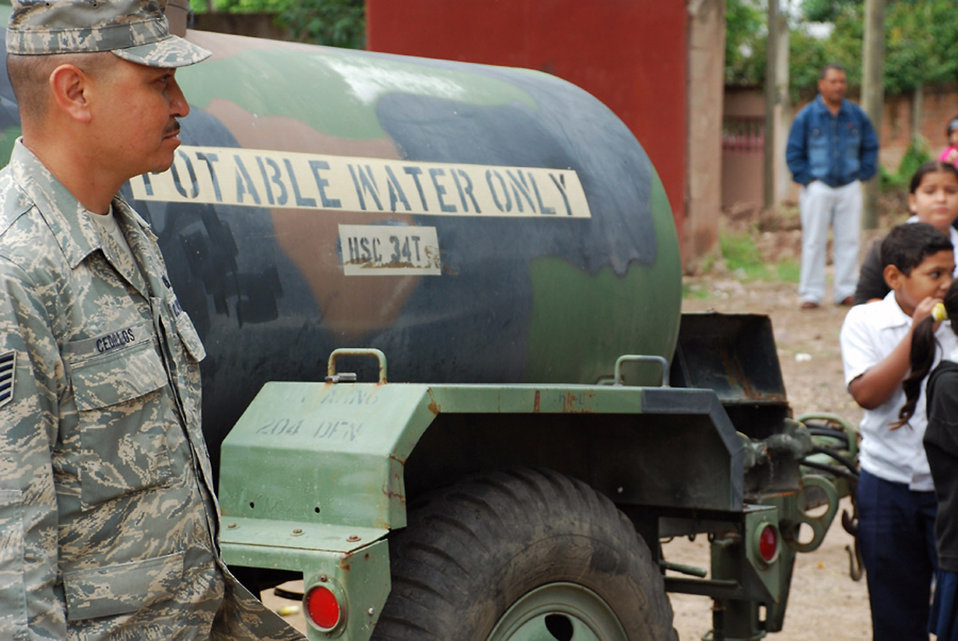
Servicemembers provide water to flood-affected community

Tech. Sgt. Ramano Cedillos assists people in getting clean water Oct. 29 at La Paz, Honduras. After the water is filtered, it is placed in 500-gallon water buffalos so people have free access to the purified water. Sergeant Cedillos is assigned to Soto Cano Air Base, Honduras, and deployed from the Phoenix Air National Guard in Arizona.